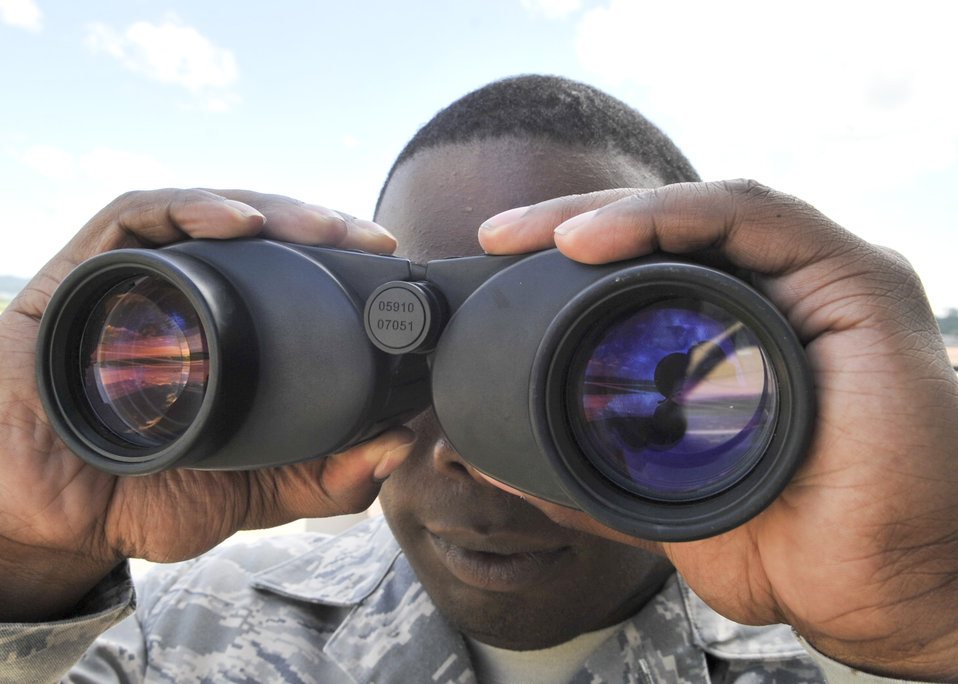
Looking for problems

Tech. Sgt. Douglas Gaddis watches an incoming aircraft through a pair of binoculars July 19, 2011, while at Osan Air Base, South Korea. The binoculars are used to ensure that the pilots have deployed their landing gear. Gaddis is an air traffic controller supervisor assigned to the 51st Operation Support Squadron.